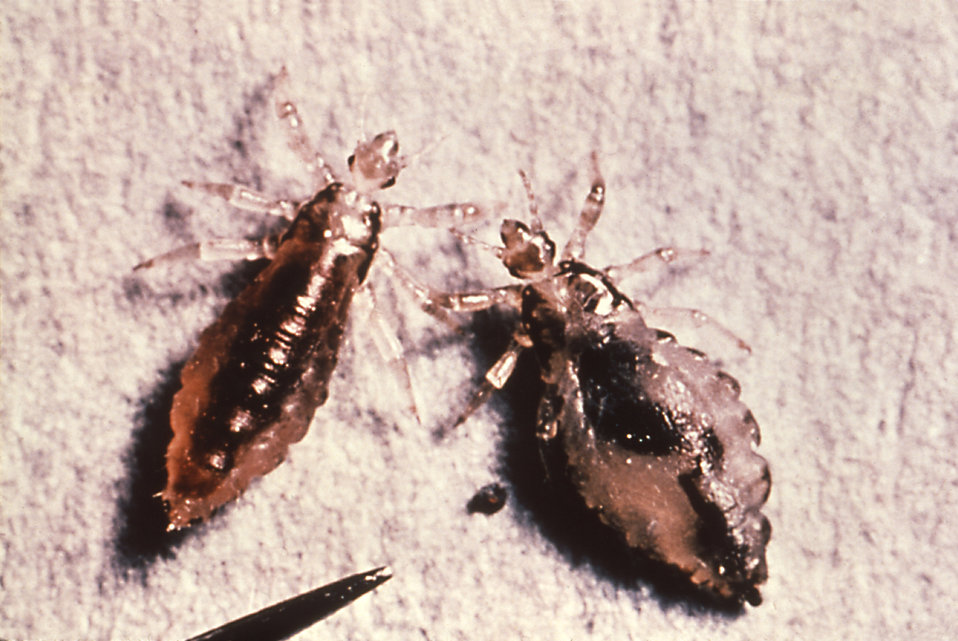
This image depicts a male and a female body louse, Pediculus humanus.